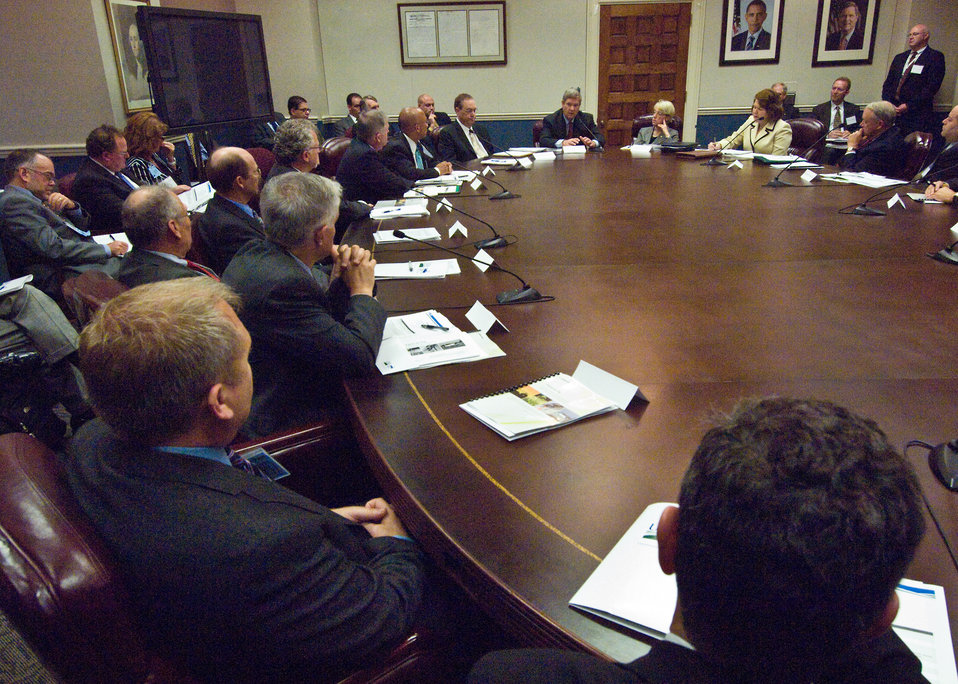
Agriculture Secretary Tom Vilsack spoke to aviation and biofuel industry executives about the United States Department of Agriculture’s development of a roadmap to meet the Biofuels Goals of the Renewable Fuels Standard at the 'Farm to Fly, Sustainable Aviation Biofuel Roundtable” at the United States Department of Agriculture in Washington, DC, Wednesday, July 14., 2010. USDA Photo 10di1440-008.